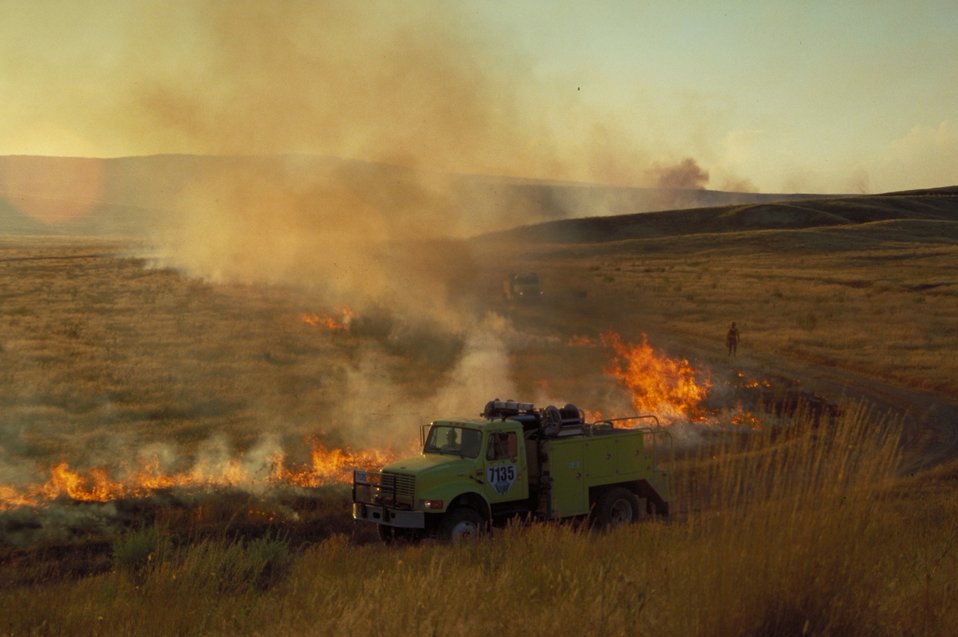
Prescribed burn Fire Season 2000 Lower Snake River District LSRD